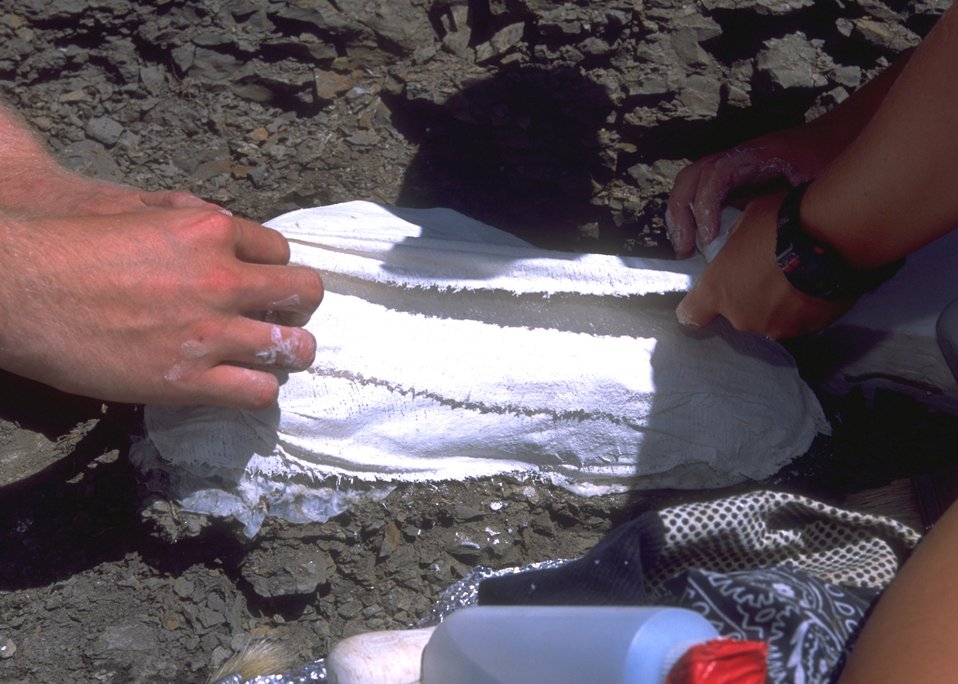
Paleontologist preparing a cast for a dinosaur bone, Lance Creek Fossil Area, Newcastle Field Office.